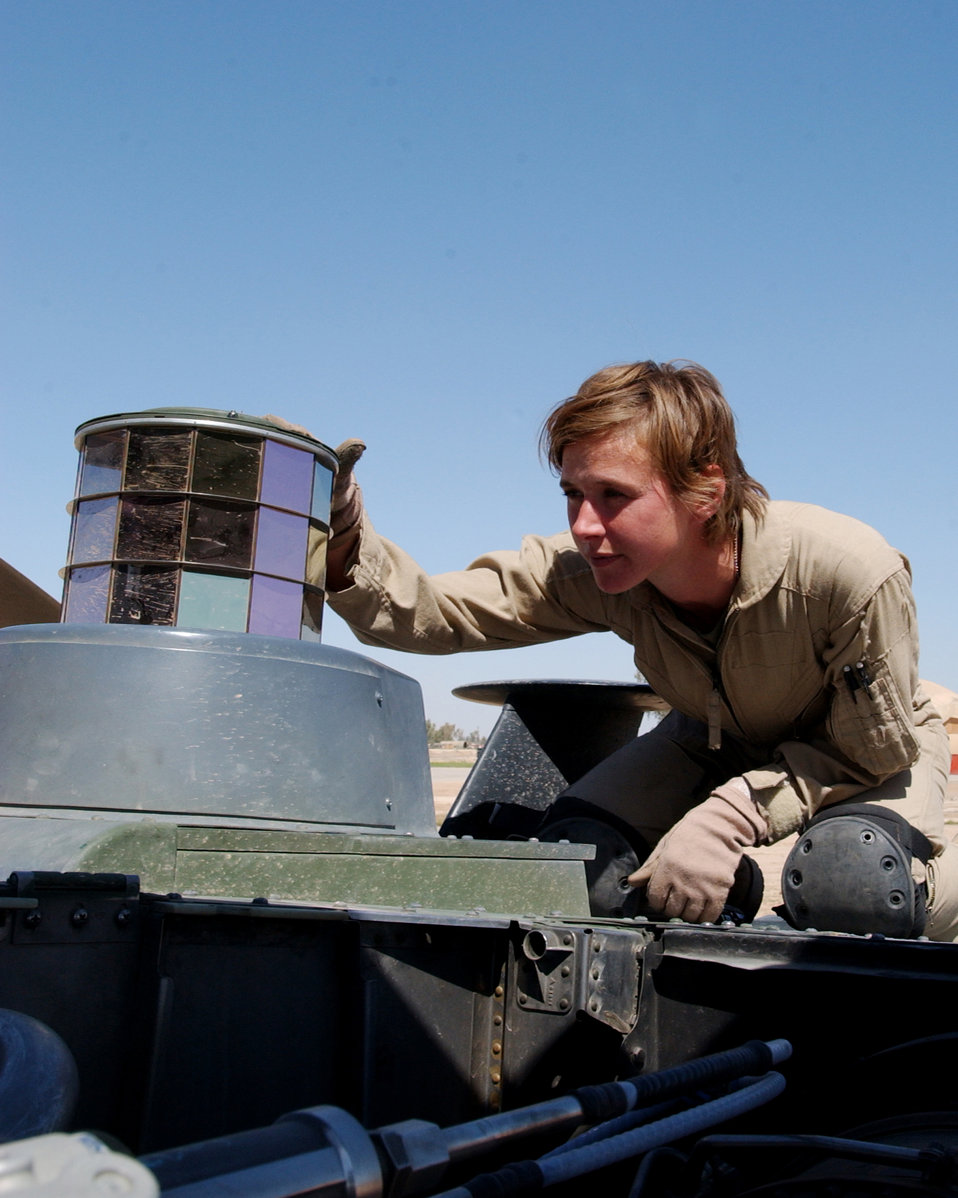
Helicopter secure

BALAD AIR BASE, Iraq -- Airman 1st Class Melody Boates checks an HH-60G Pave Hawk here April 8 before a flight supporting Operation Iraqi Freedom. Airman Boates is a flight engineer with the 64th Expeditionary Rescue Squadron.